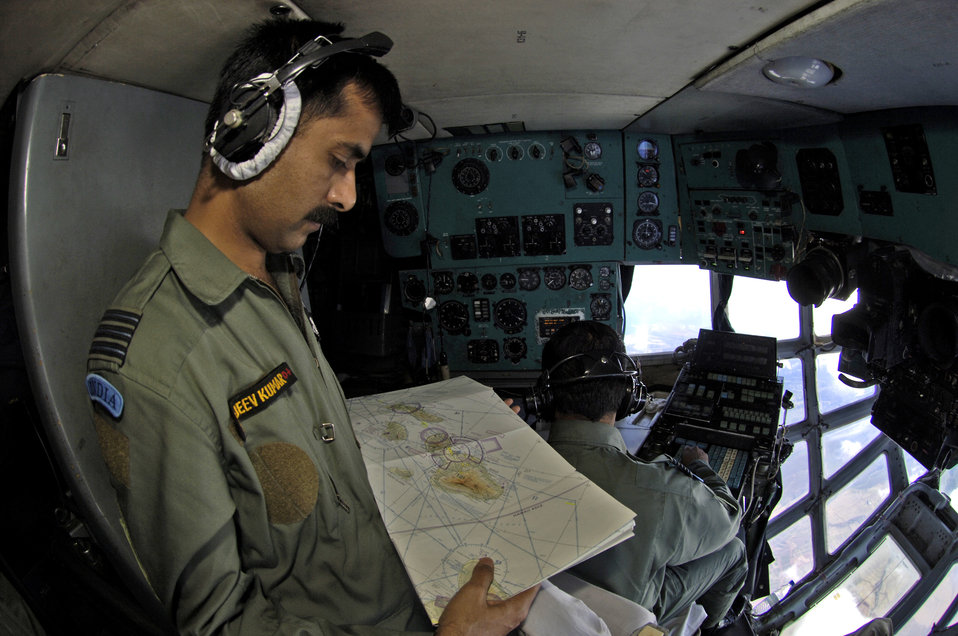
Airmen fly with Indian air force counterparts

Wing Commander Sanjeev Gupta looks over a navigation map while flying over the big island of Hawaii in an IL-76 during a training mission Sept. 20. Wing Commander Gupta is a navigator in the Indian air force.